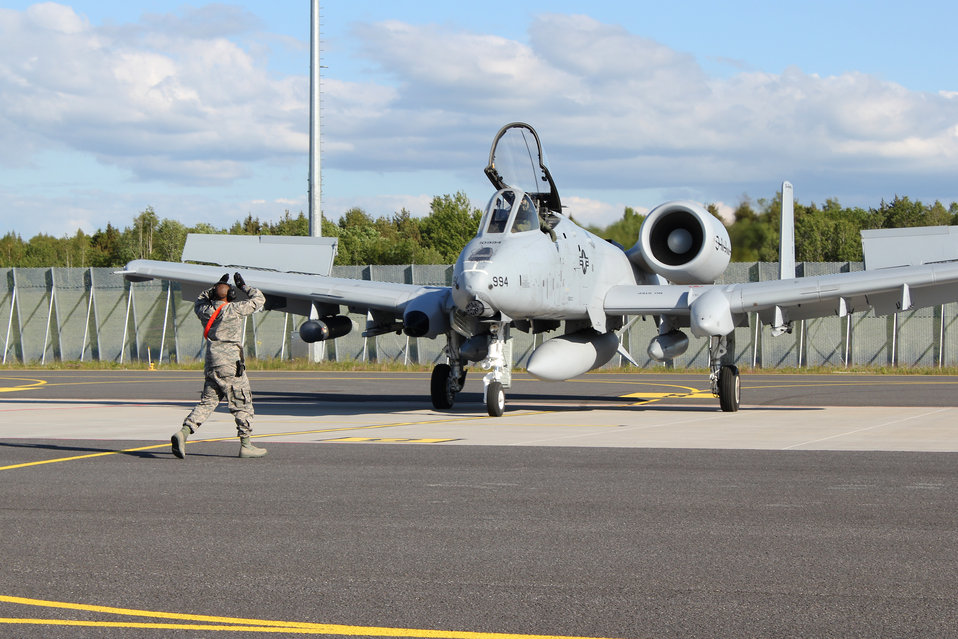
Michigan A-10s land in Estonia

Staff Sgt. Cecil Manning guides an A-10 Thunderbolt II aircraft moments after it landed at Amari Air Base, Estonia, June 8, 2012. The aircraft, flown by the Michigan Air National Guard’s 107th Fighter Squadron, Airmen were in Estonia to participate in Saber Strike 2012, a multi-national exercise based in Estonia and Latvia. Manning is a crew chief with the 127th Maintenance Group with the Michigan Air National Guard.